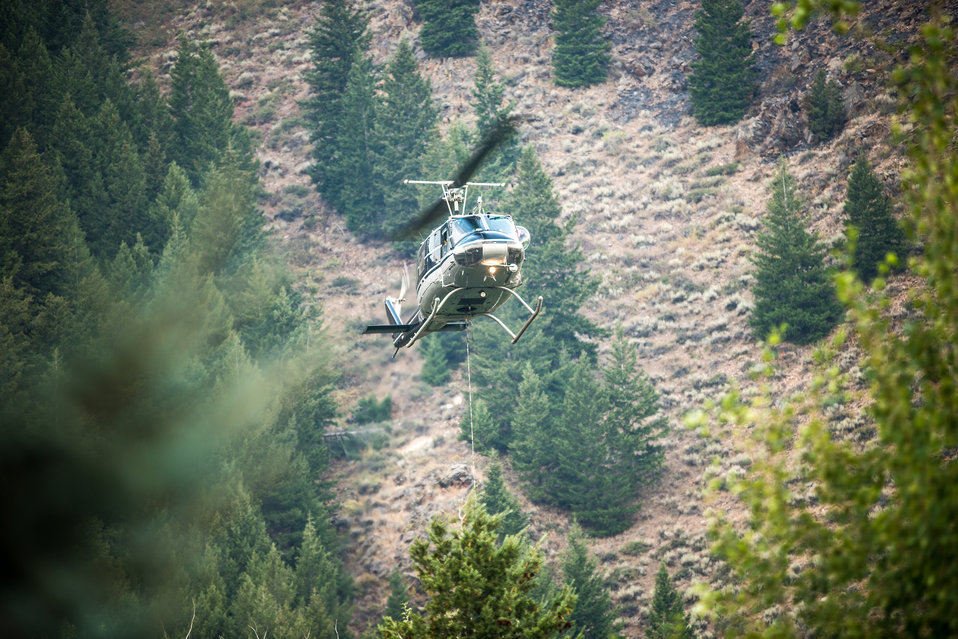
A Bell UH-1H helicopter lifts a full Bambi Bucket, a collapsible bucket utilizing a pilot-controlled release valve, that is able to deliver a concentrated column of water from the helicopter to the fire on the Carbonate Ridge, rising behind the Wood River, during Beaver Creek Fire, west of Hailey, ID, on Monday, Aug 19, 2013.